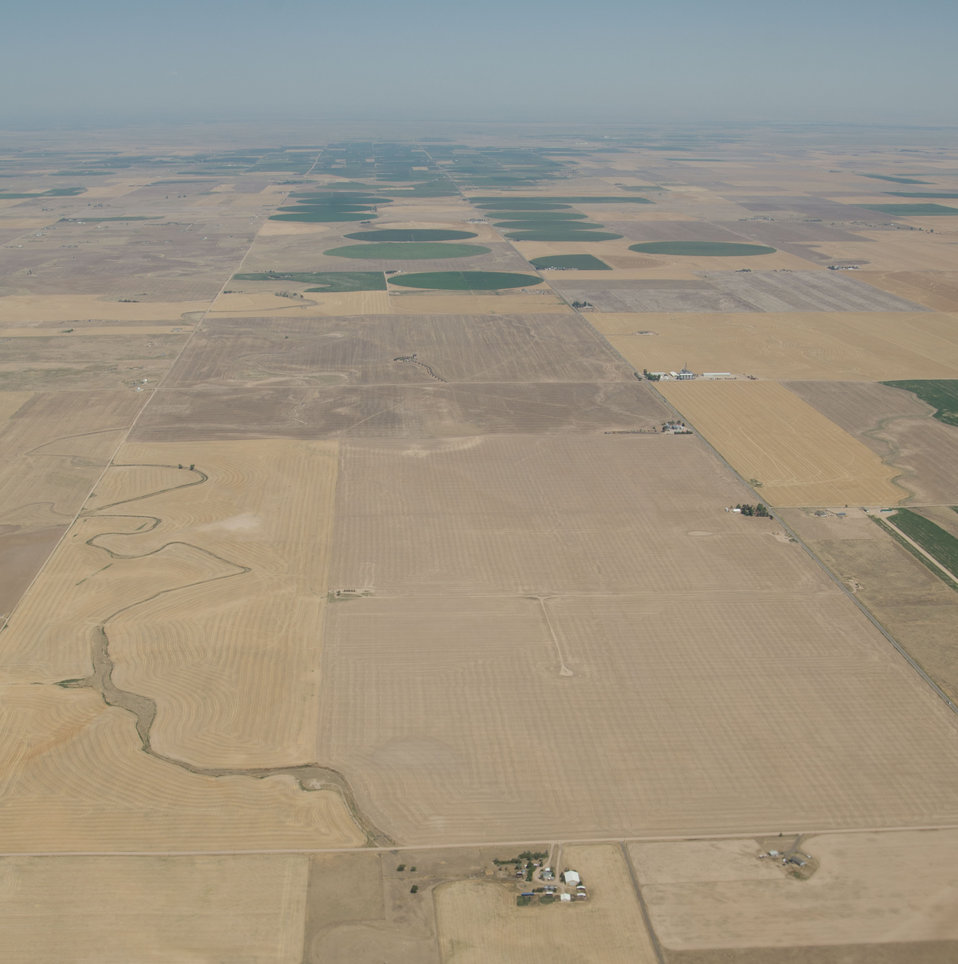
Aerial views of drought affected Colorado farm lands, 76 miles east of Denver, Colorado on Saturday, July 21, 2012.